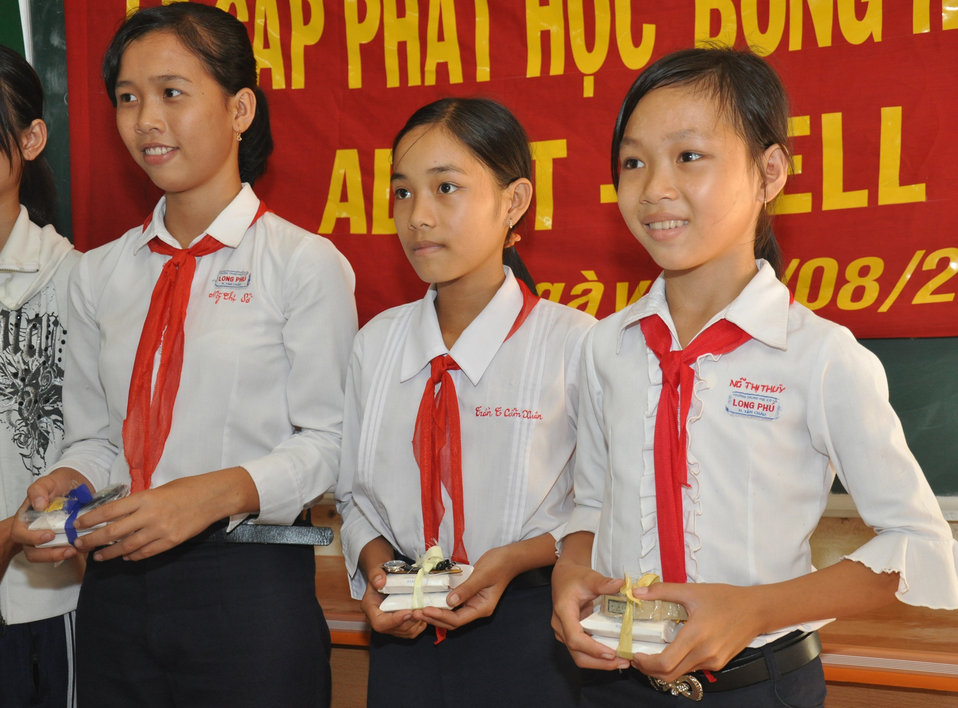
Supporting Girls Education in Vietnam